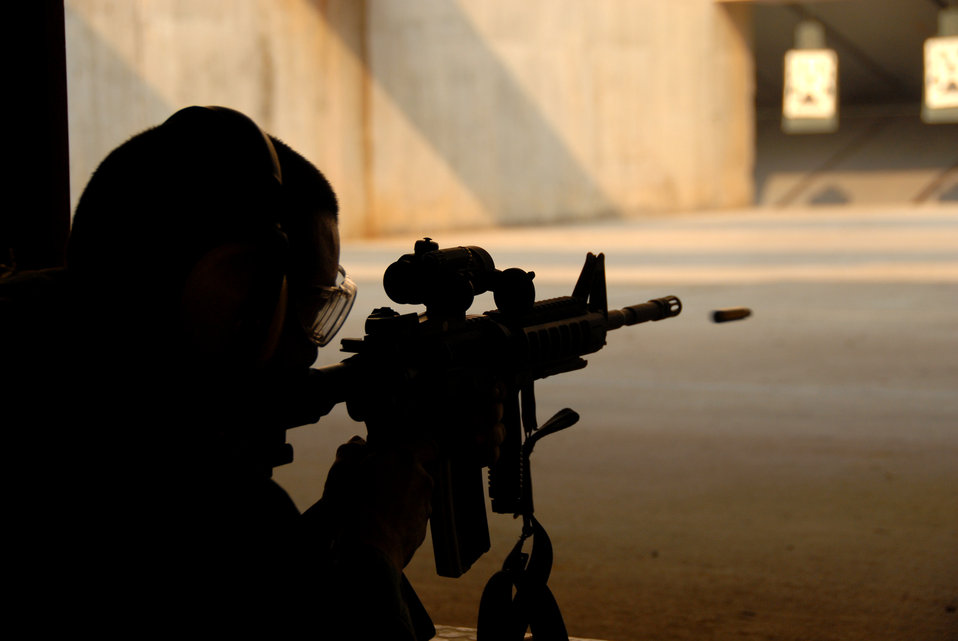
Keep firing

An Airman tests his skills at the Osan Air Base, South Korea, shooting range March 15. .